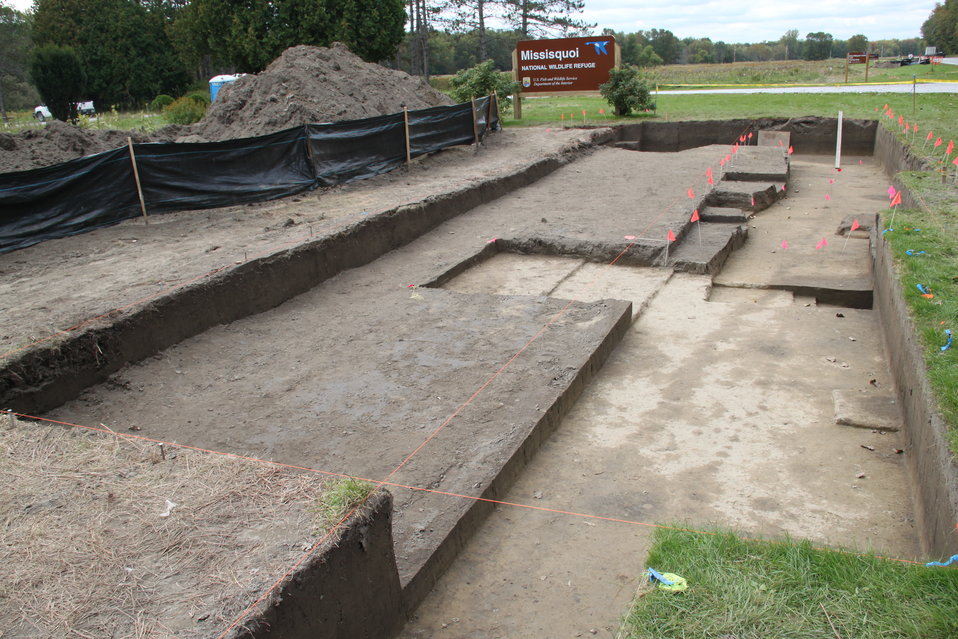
Archaeology on Missisquoi National Wildlife Refuge